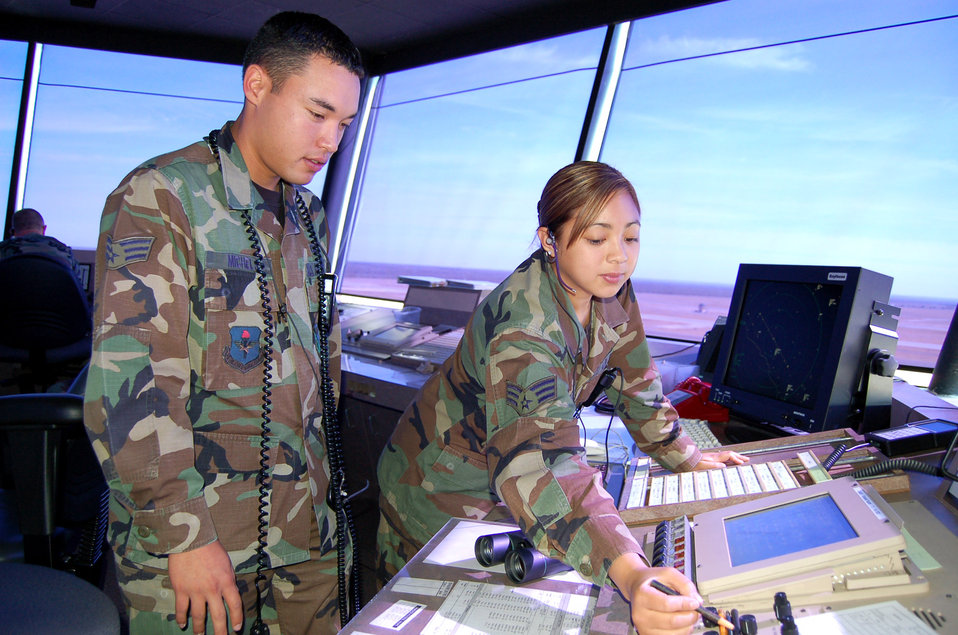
Laughlin students keep air traffic controllers busy

Senior Airman Jennifer Manibusan makes a note about the day's flights with guidance from Senior Airman Anthony Michels in the air traffic control tower at Laughlin Air Force Base, Texas, on June 26, 2006. Airman Manibusan, from Alameda, Calif., and Airman Michels, from Rosemont Minn., are air traffic controllers with the 47th Operations Support Squadron.